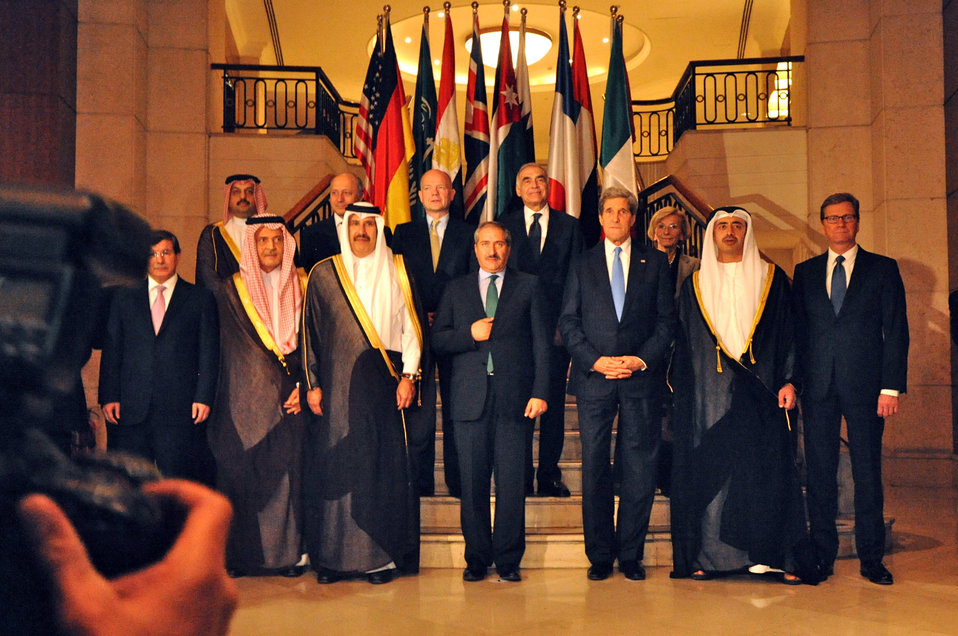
Secretary Kerry Poses for a Family Photo With London Eleven Leaders

U.S. Secretary of State John Kerry poses for a family photo with fellow leaders of the London Eleven in Amman, Jordan, on May 22, 2013. Pictured in the front row from left to right are the following individuals: Turkish Foreign Minister Ahmet Davutoglu, Saudi Arabian Foreign Minister Prince Saud al-Faisal, Qatari Prime Minister Sheik Hamad bin Jassim Al Thani, Jordanian Foreign Minister Nasser Judeh, Secretary Kerry, United Arab Emirates' Foreign Minister Sheikh Abdullah Bin Zayed al-Nahyan, and German Foreign Minister Guido Westerwelle. Pictured in the top row from left to right are the following individuals: Qatari Foreign Minister Khalid bin Mohamed Al-Attiyah, French Foreign Minister Laurent Fabius, British Foreign Secretary William Hague, Egyptian Foreign Minister Mohamed Kamel Amr, and Italian Foreign Minister Emma Bonino.